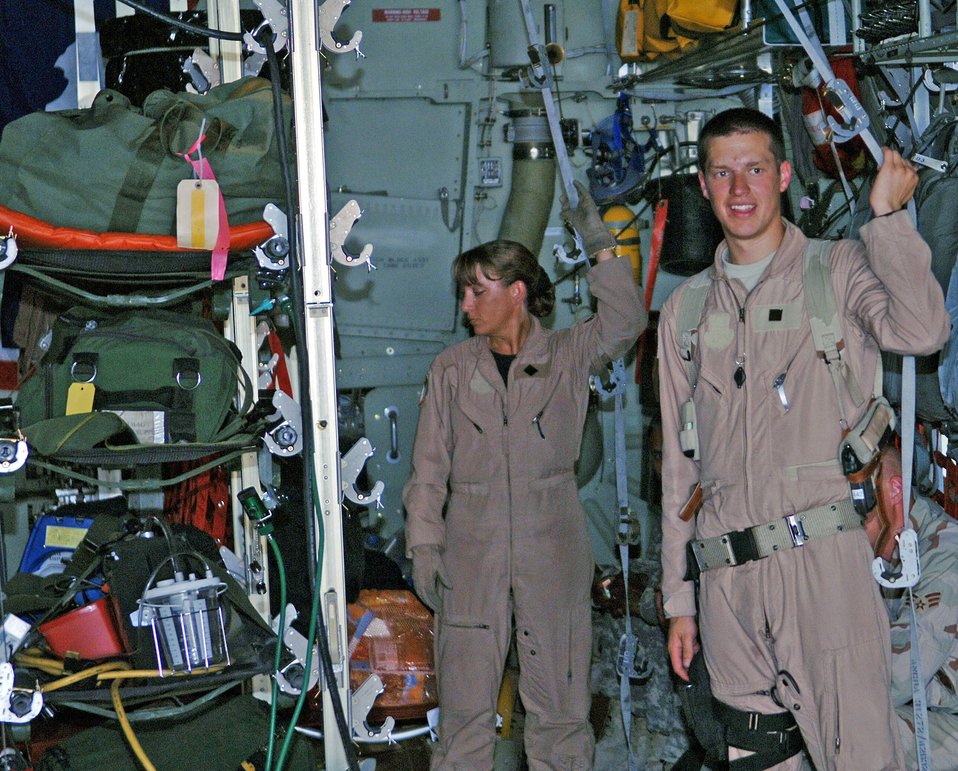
Aeromedical evacuation teams ready to help anytime

Master Sgt. Theresa Sheheen and Airman 1st Class Bryce Bishop prepare to receive a litter patient during an aeromedical evacuation mission June 22 from Bagram Air Base, Afghanistan. Sergeant Sheheen and Airman Bishop are 455th Expeditionary Aeromedical Evacuation Flight medical technicians and deployed from the Wyoming Air National Guard's 187th Aeromedical Evacuation Squadron from Cheyenne, Wyo.